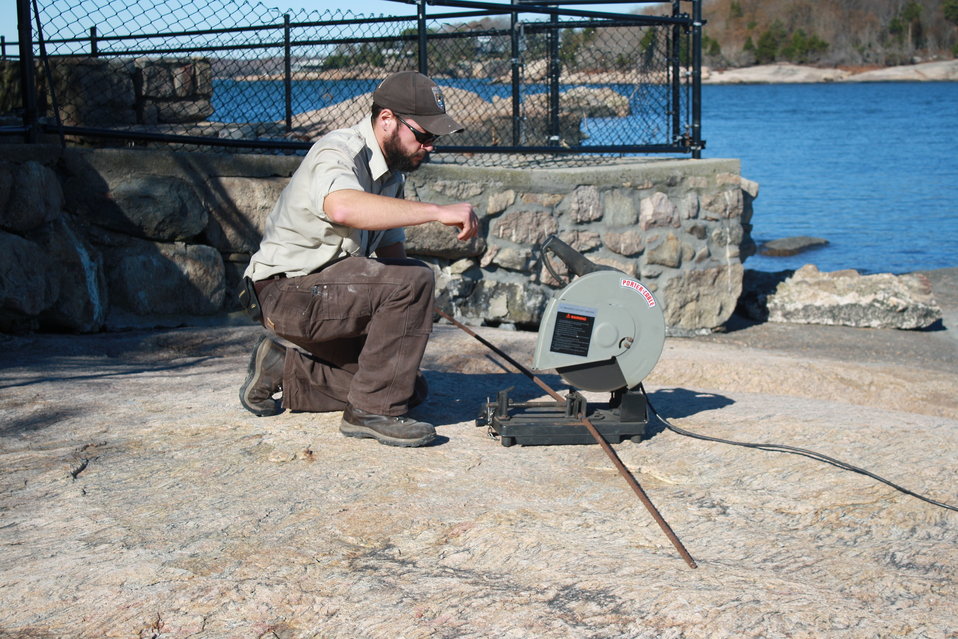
Beginning repairs at Stewart B. McKinney National Wildlife Refuge (CT)

A refuge staff member working to repair a damaged fence on Outer Island after Hurricane Sandy.